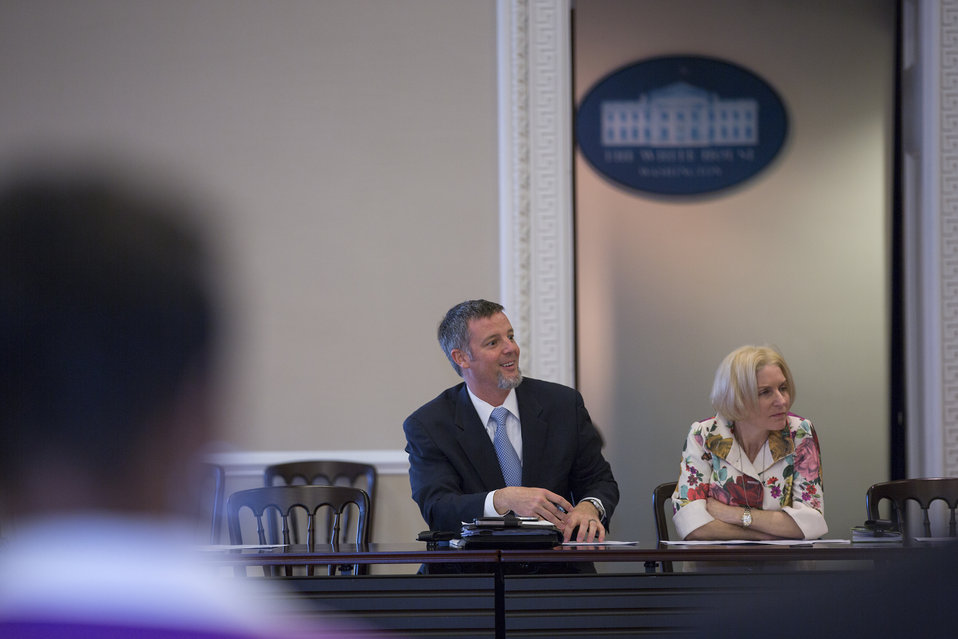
Senior Advisor, White House Domestic Policy Council Doug McKalip and Senior Policy Advisor for Let’s Move Julie Moreno host a White House Rural Council forum on healthy food access, local food and economic opportunity, on Tuesday, Feb. 4, 2014 at the White House in Washington, DC.